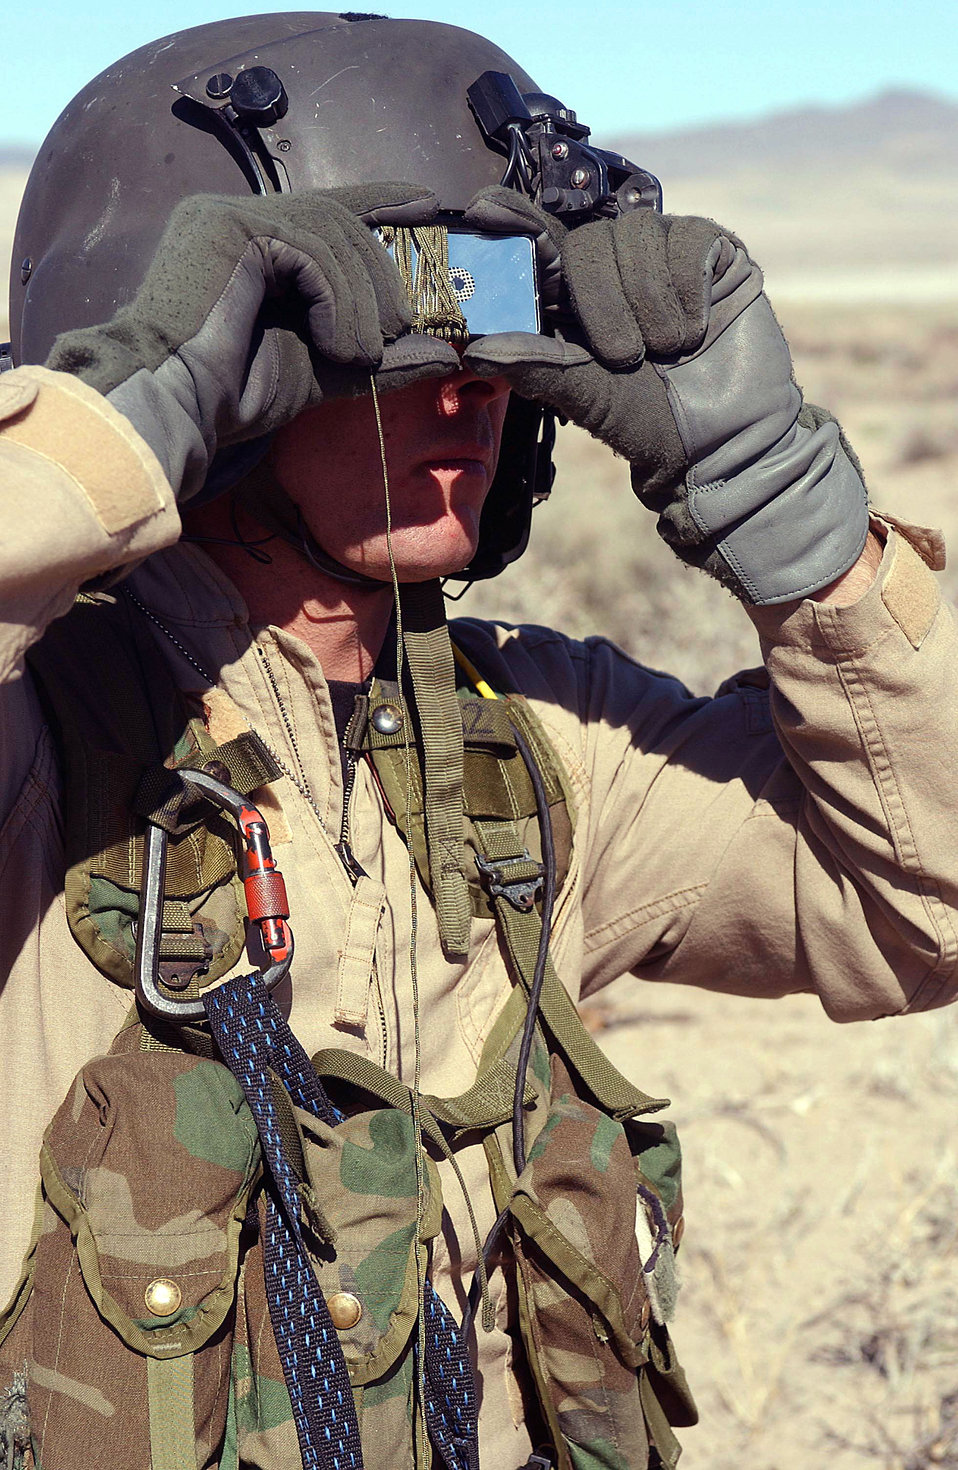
I'm down here

NAVAL AIR STATION FALLON, Nev. -- Tech. Sgt. Mark Riensche uses a signaling device to alert search and rescue forces of his location during Desert Rescue XI. The joint-service combat search and rescue training exercise simulates downed aircrew behind enemy lines and allows airmen to practice rescue-related missions. They also experiment with new techniques in realistic scenarios.